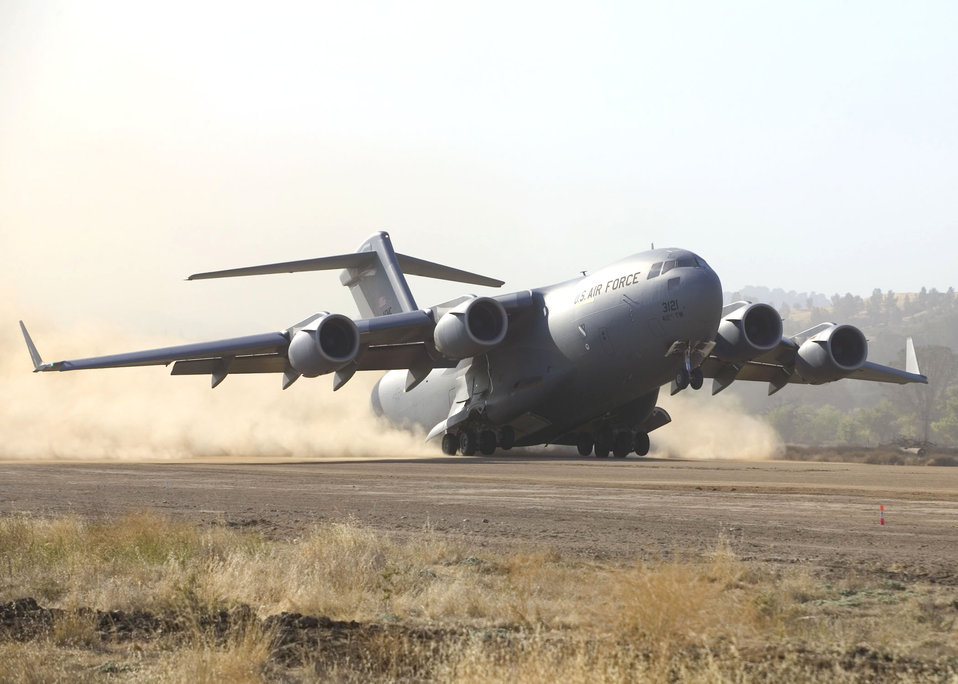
Dirt runway testing increases C-17 safety, agility

A C-17 Globemaster III takes off during Phase 1 tests at Fort Hunter Liggett, Calif. Tests are being conducted to determine the C-17's ability to bring a large force into a wet or dry dirt airfield without making runway condition corrections. Phase 2 is scheduled to begin Dec. 4 at Edwards Air Force Base, Calif.